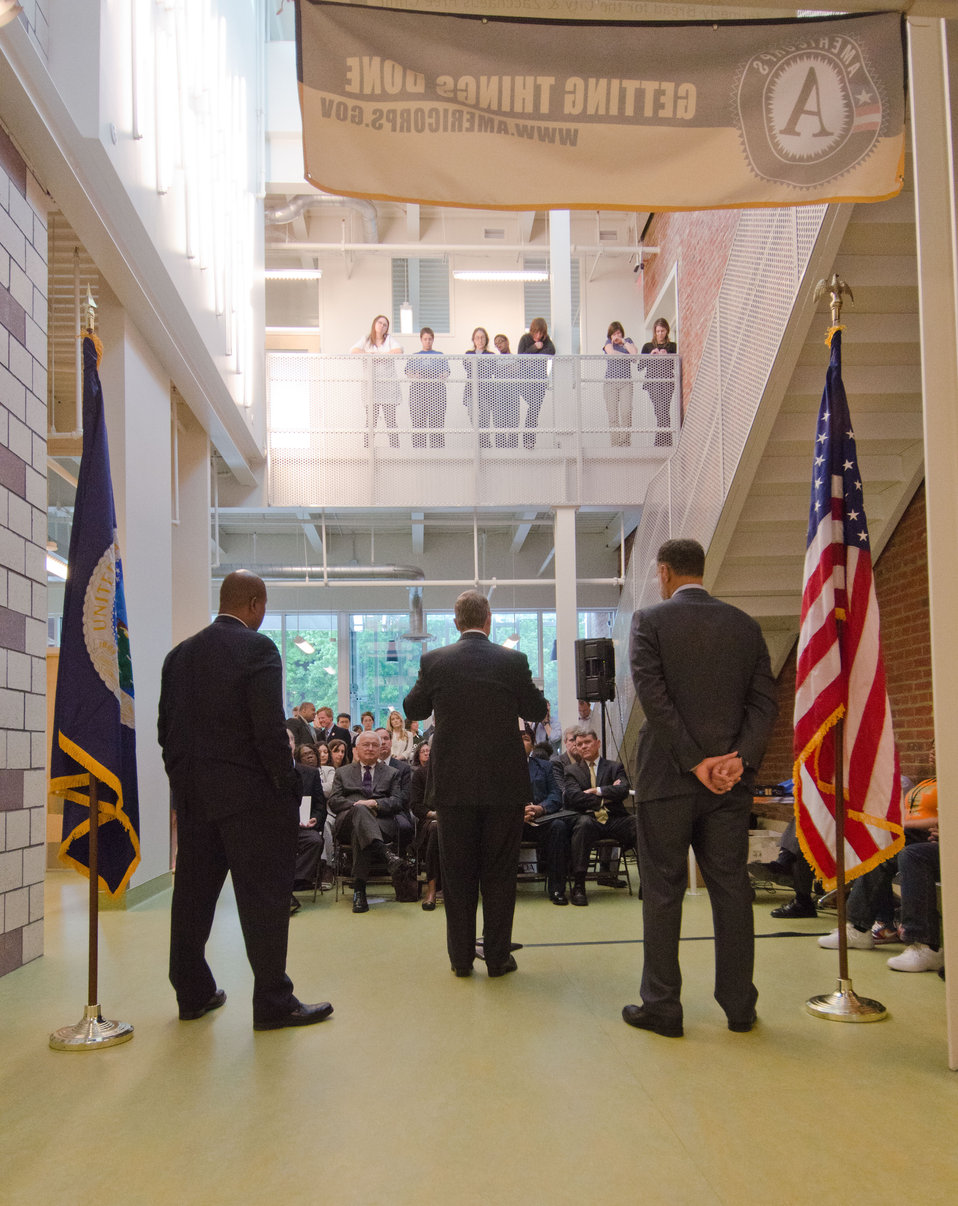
Agriculture Secretary Tom Vilsack Thursday (center), corperation for natinal and comunity Service CEO Patrick Corvington and Bread for the City President George Jones announced at Bread for the City, on April 29, 20ll in Washington, DC, that the USDA will become champions to end hunger and innovative partnerships to address hunger, especially among children USDA Photo by Lance Cheung.